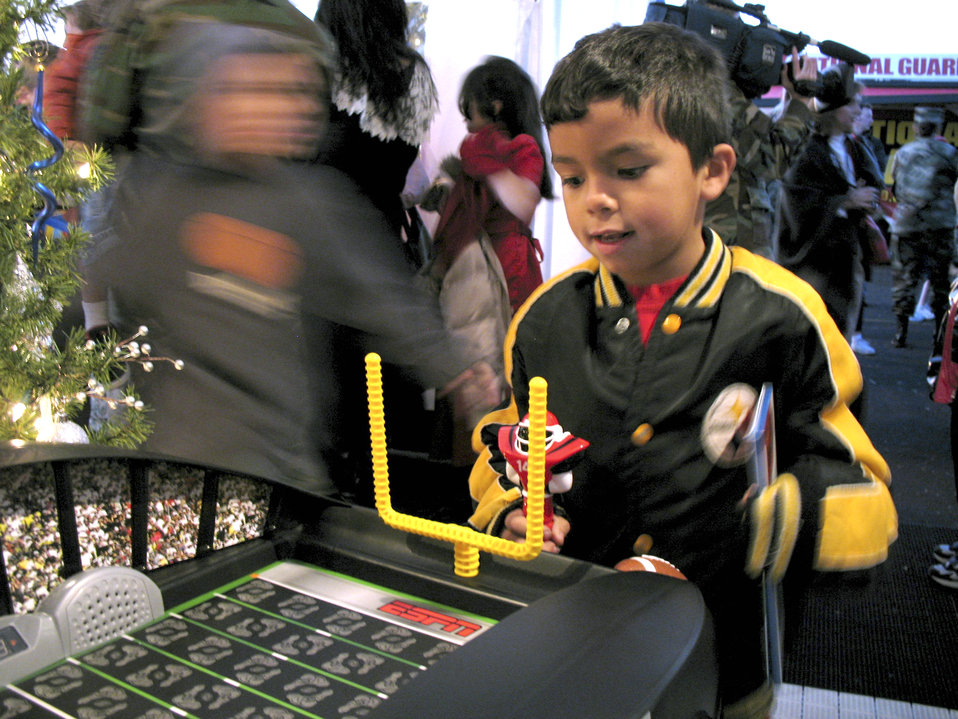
Operation Christmas

Michael Lowery plays with a football game during Operation Christmas Dec. 13 at the Texas National Guard Armory in San Antonio. Operation Christmas is an outreach program designed to show support to military families during the holiday season.